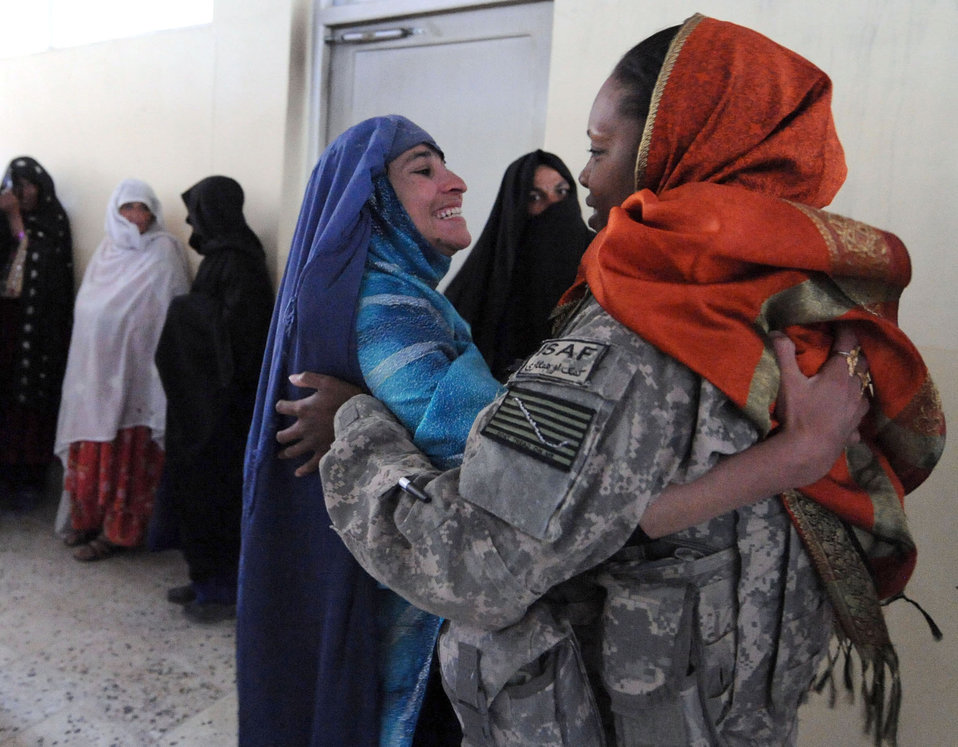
Shura gives voice to women's role in Paktika

Navy Lt. j.g. Tamora Holland is greeted by a community development facilitator April 25, 2011, in Urgun, Afghanistan, during the first women's shura. Lieutenant Holland is the Paktika Provincial Reconstruction Team medical officer and female engagement team leader.